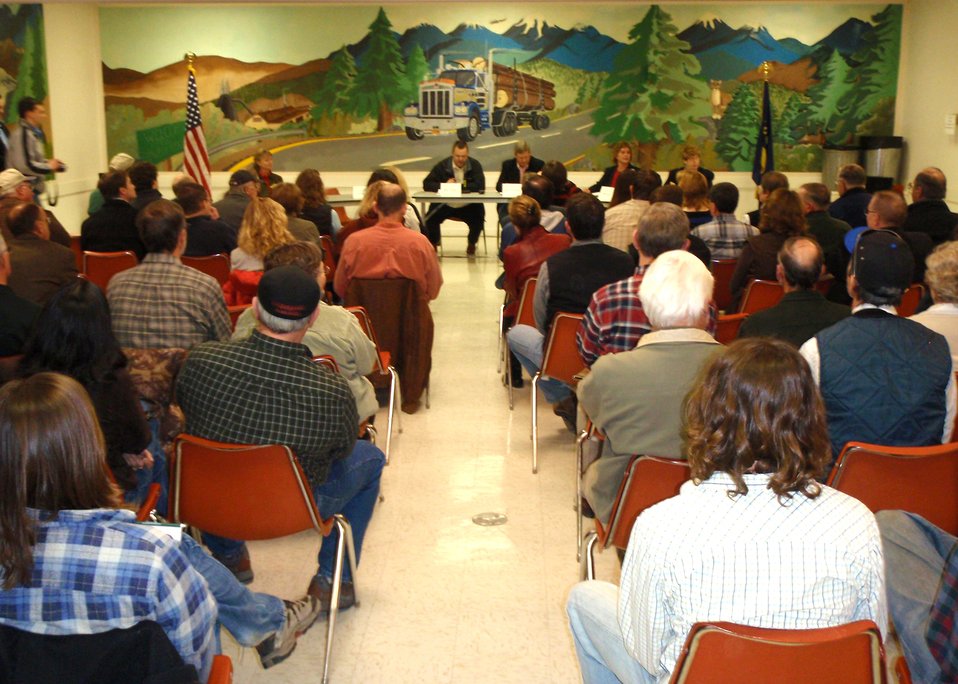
Agriculture Secretary Tom Vilsack and U. S. Senator Jon Tester (D, MT) listen to public comments in Deer Lodge, Montana on March 6, 2010. Secretary Vilsack was there to discuss his vision for healthy forests and view bark beetle infested areas in southwestern Montana. USDA photo 10di1257-03